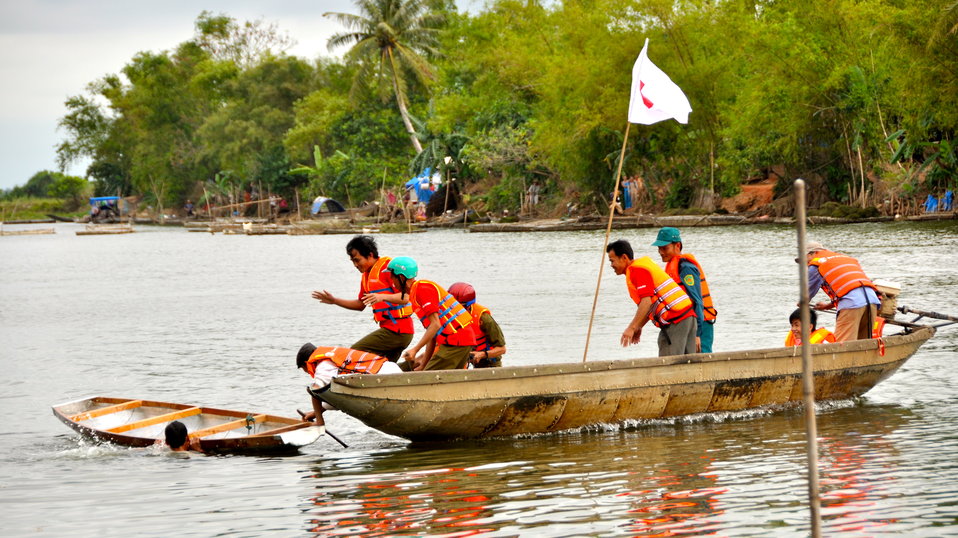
USAID and Save the Children support community evacuation drill and emergency preparedness in central Vietnam

Loc An Commune, Phu Loc District, Thua Thien Hue Province
December 4, 2012, Photo: Richard Nyberg, @USAIDVietnam